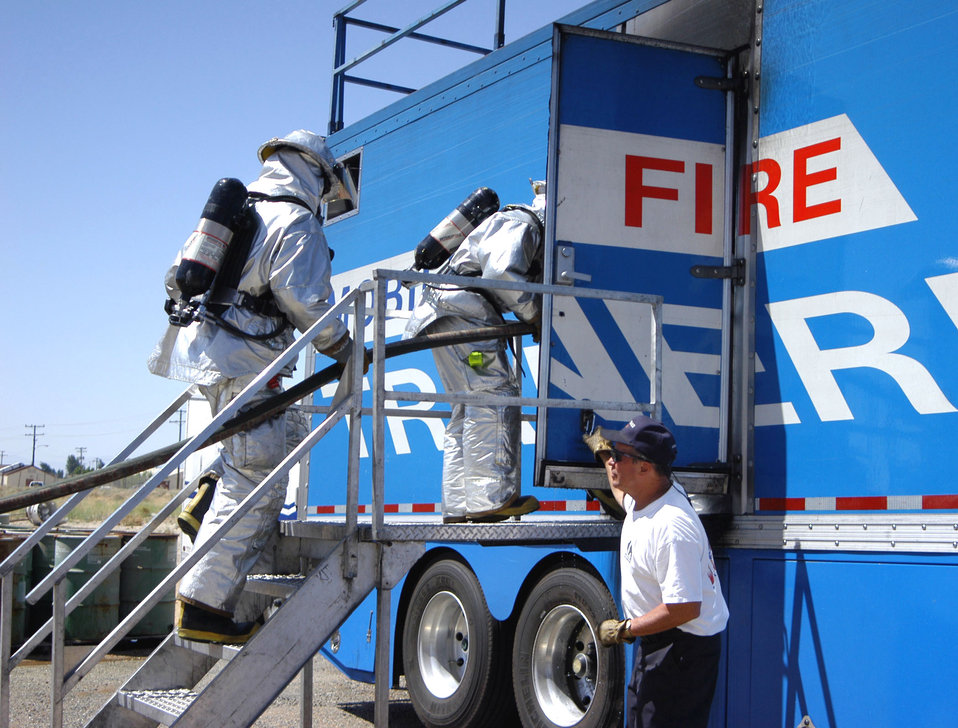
Simulated fire

EDWARDS AIR FORCE BASE, Calif. -- Firefighters here enter a training simulator May 3.